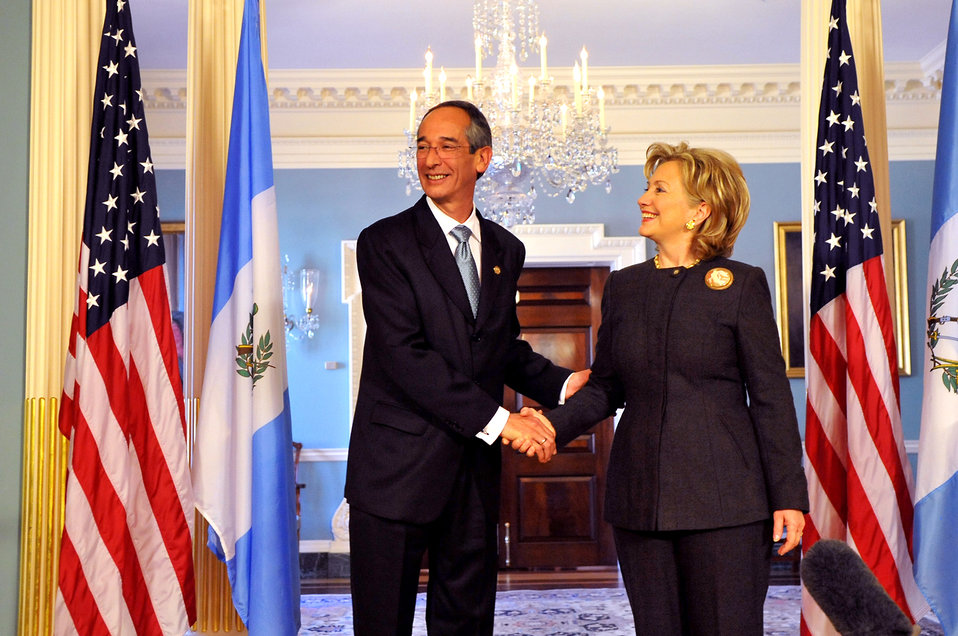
Secretary Clinton Meets With Guatemalan President

U.S. Secretary of State Hillary Rodham Clinton meets with Guatemalan President Álvaro Colom at the U.S. Department of State in Washington, DC February 18, 2010.